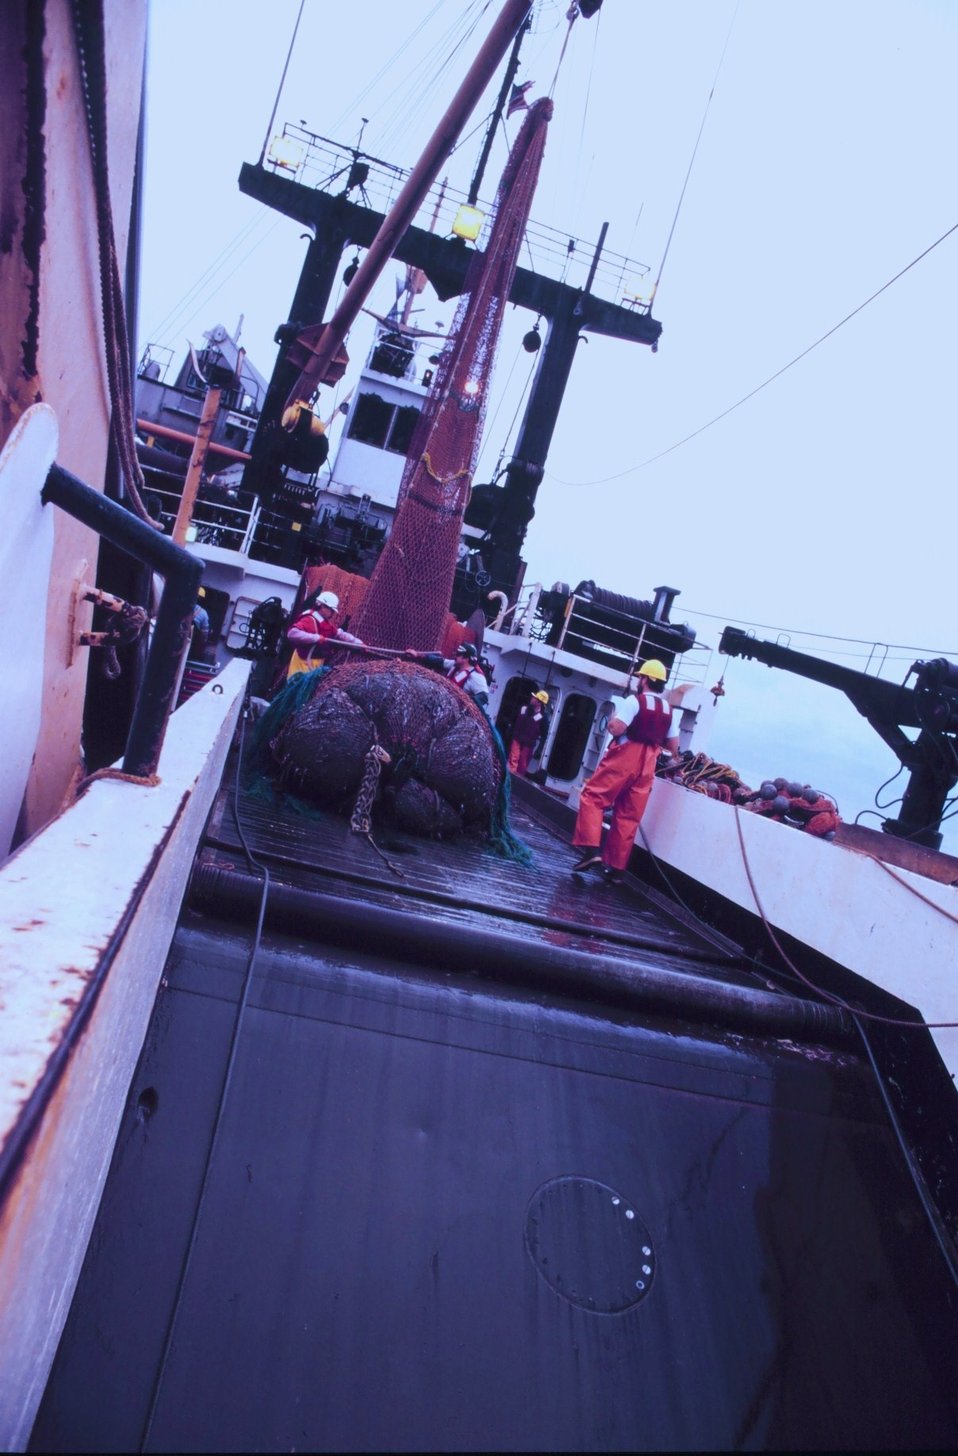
Trawling operations on the MILLER FREEMAN. A full net-load of fish brought aboard. The cod end is on deck filled with the results of the trawl. It will be dumped in the checker, i.e, the sorting table.